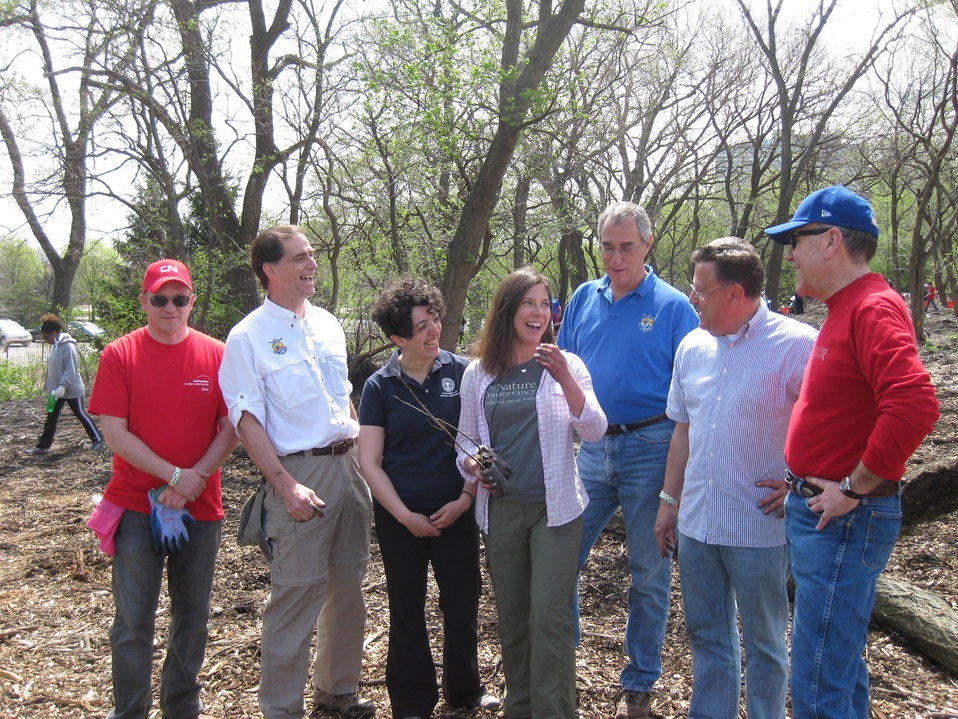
Chicago Burnham Wildlife Corridor Partners

Chicago Park District Burnham Corridor Community Planting Day
May 10, 2014
Photo by USFWS; Louise Clemency